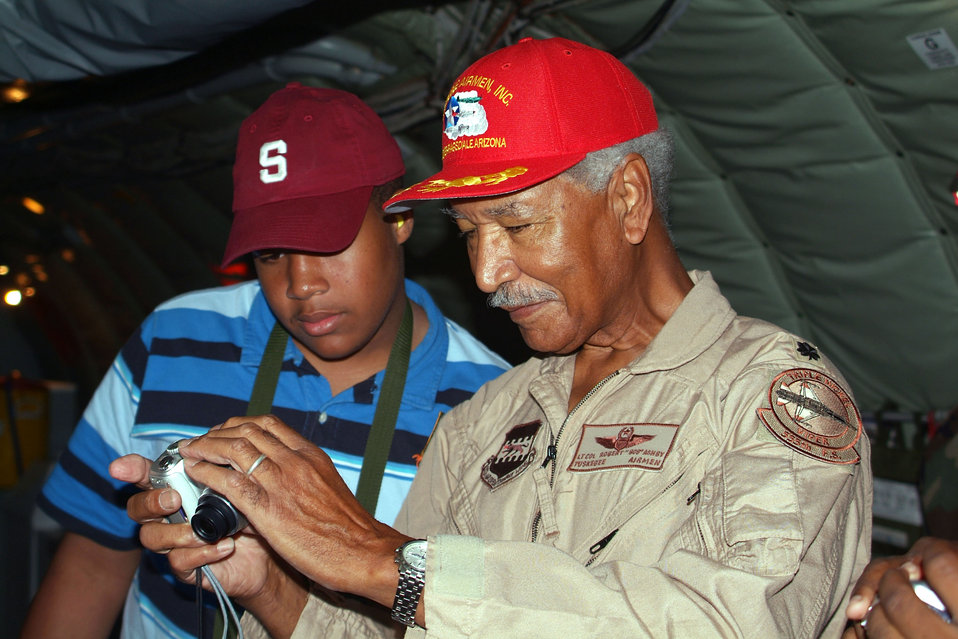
Tuskeegee Airmen

Retired Lt. Col. Bob Ashby of the Tuskegee Airmen shows photos to a Civil Air Patrol cadet during a KC-135 Stratotanker incentive flight. Cadets were attending the CAP and Aviation Careers Education Camp in Phoenix on Aug. 1. The flight was held in conjunction with the Tuskeegee Airmen Convention.